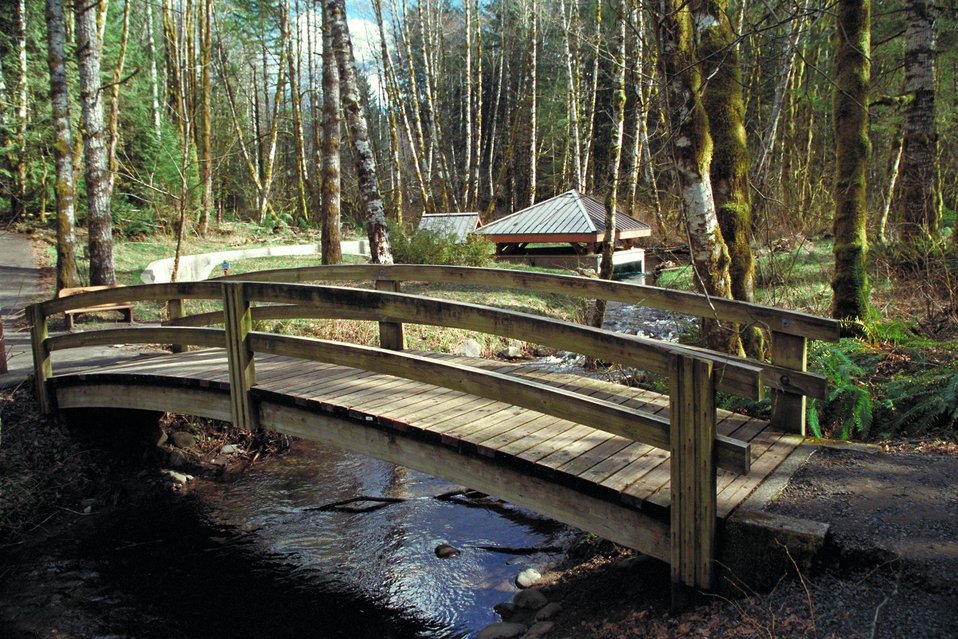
Cascade Stream Watch is an environmental education program conducted at BLM's Wildwood Recreation site.